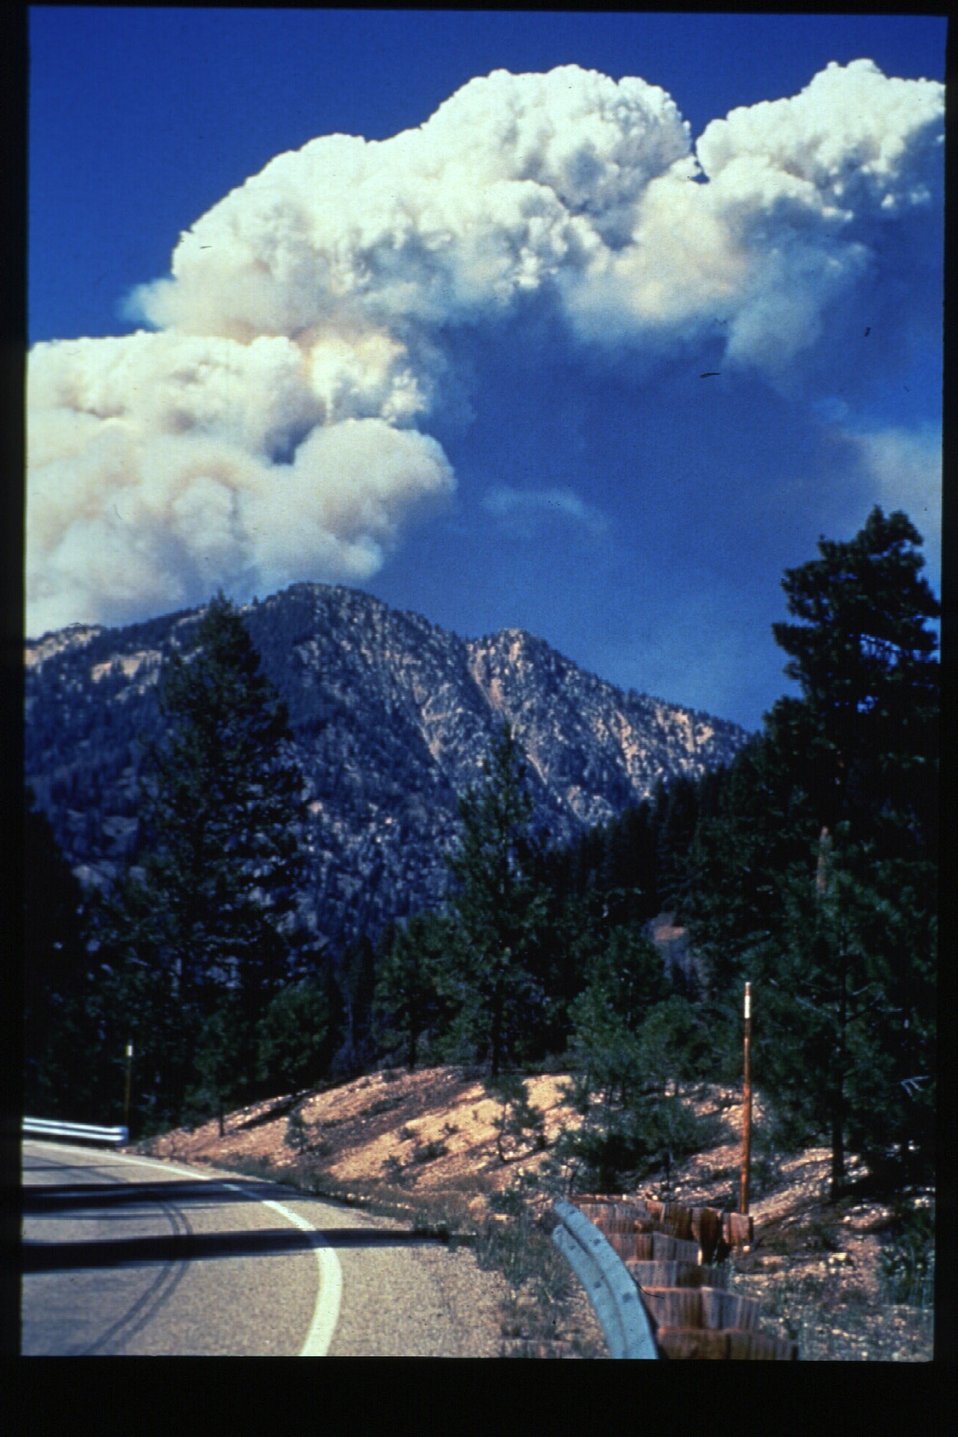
Boise Foothills Fire Danskin Mountains and South Fork of Boise River Smoke Four River Field Office LSRD Lower Snake River District